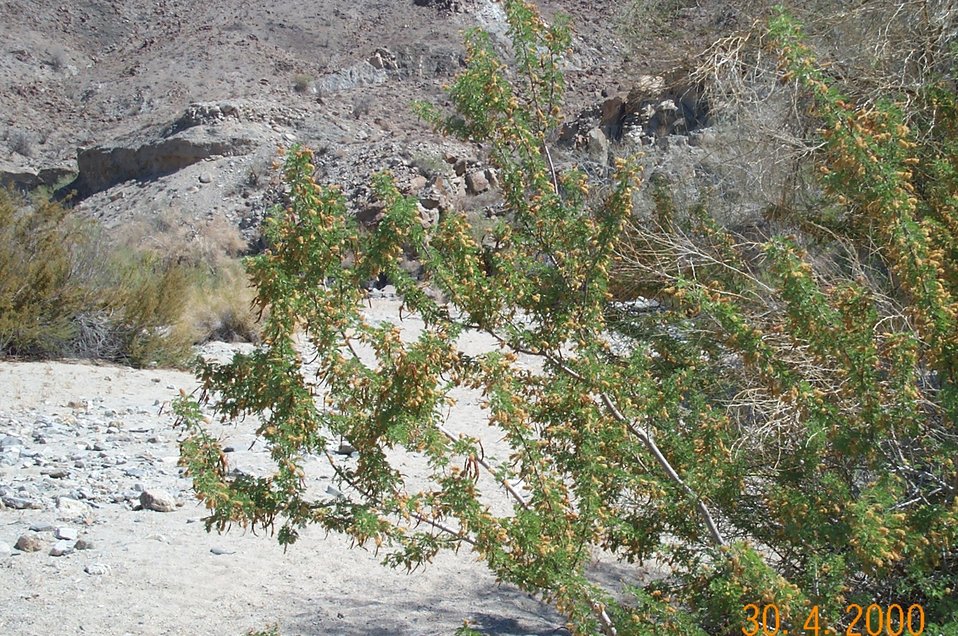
Desert vegetation (catclaw)